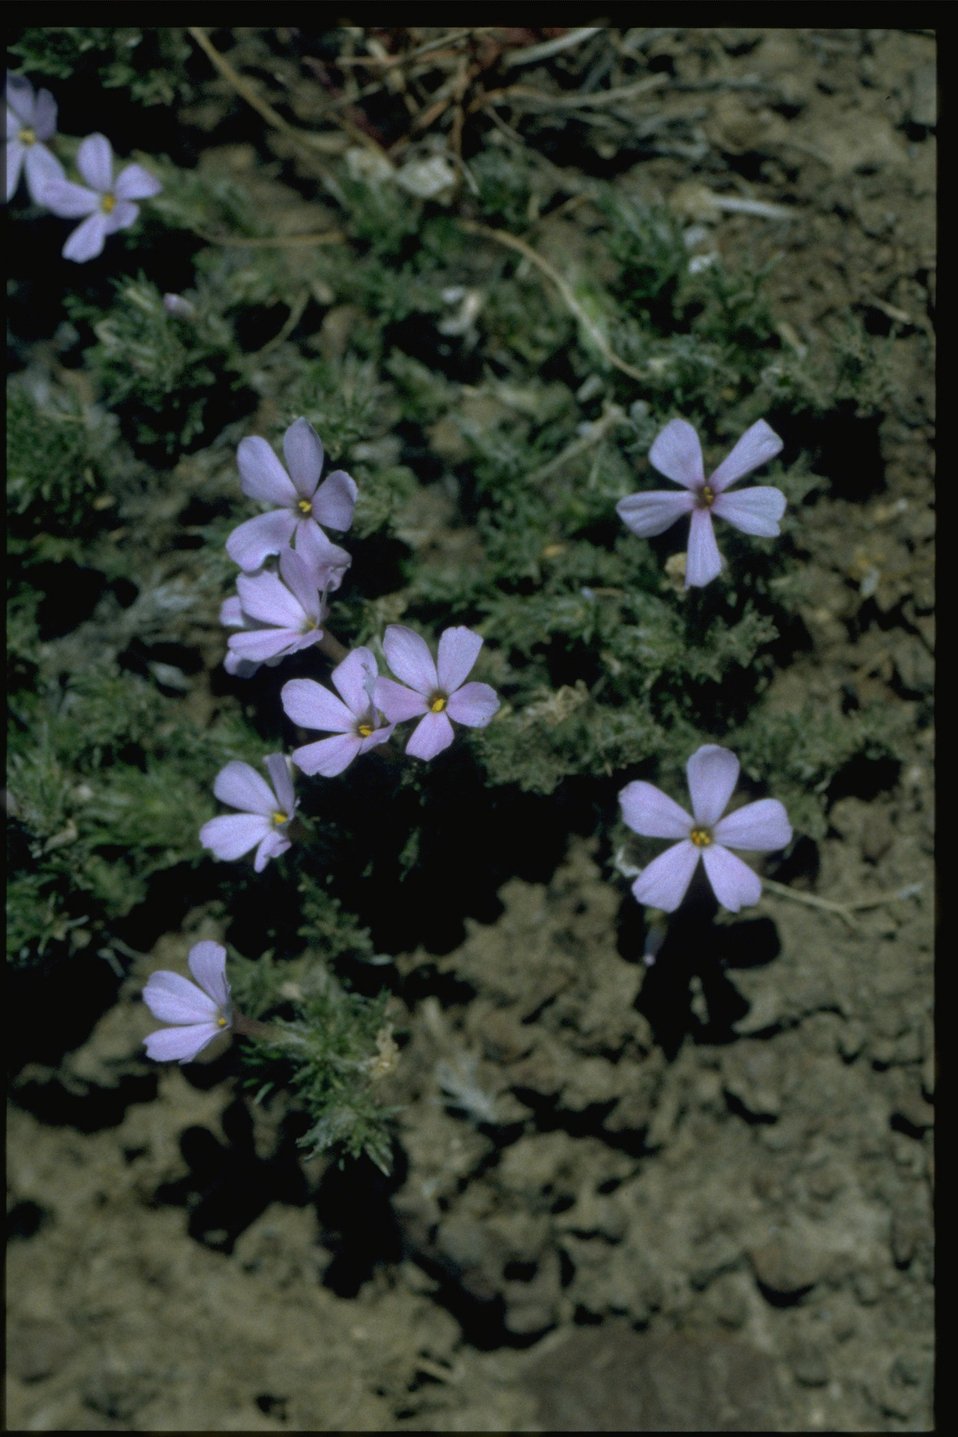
Medium shot of spiny phlox (Phlox hoodii).